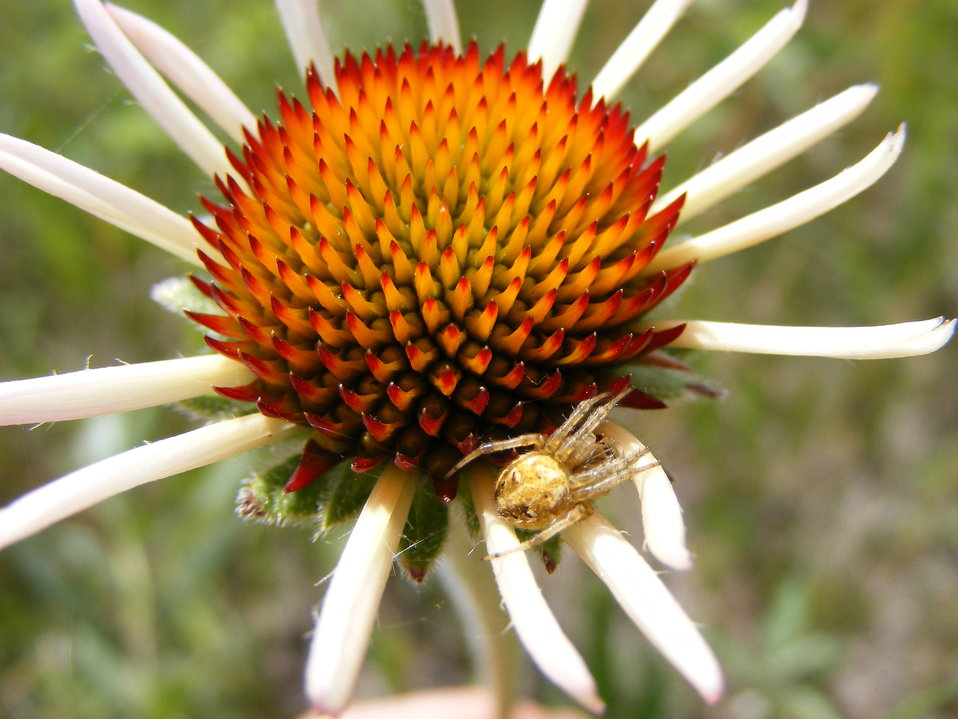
Waiting for a Meal

A spider waits on a purple coneflower for an unsuspecting victim at Lake Emma WPA in Waubay Wetland Management District.

Photo Credit: Laura Hubers / USFWS

Photo Contest Entry #133